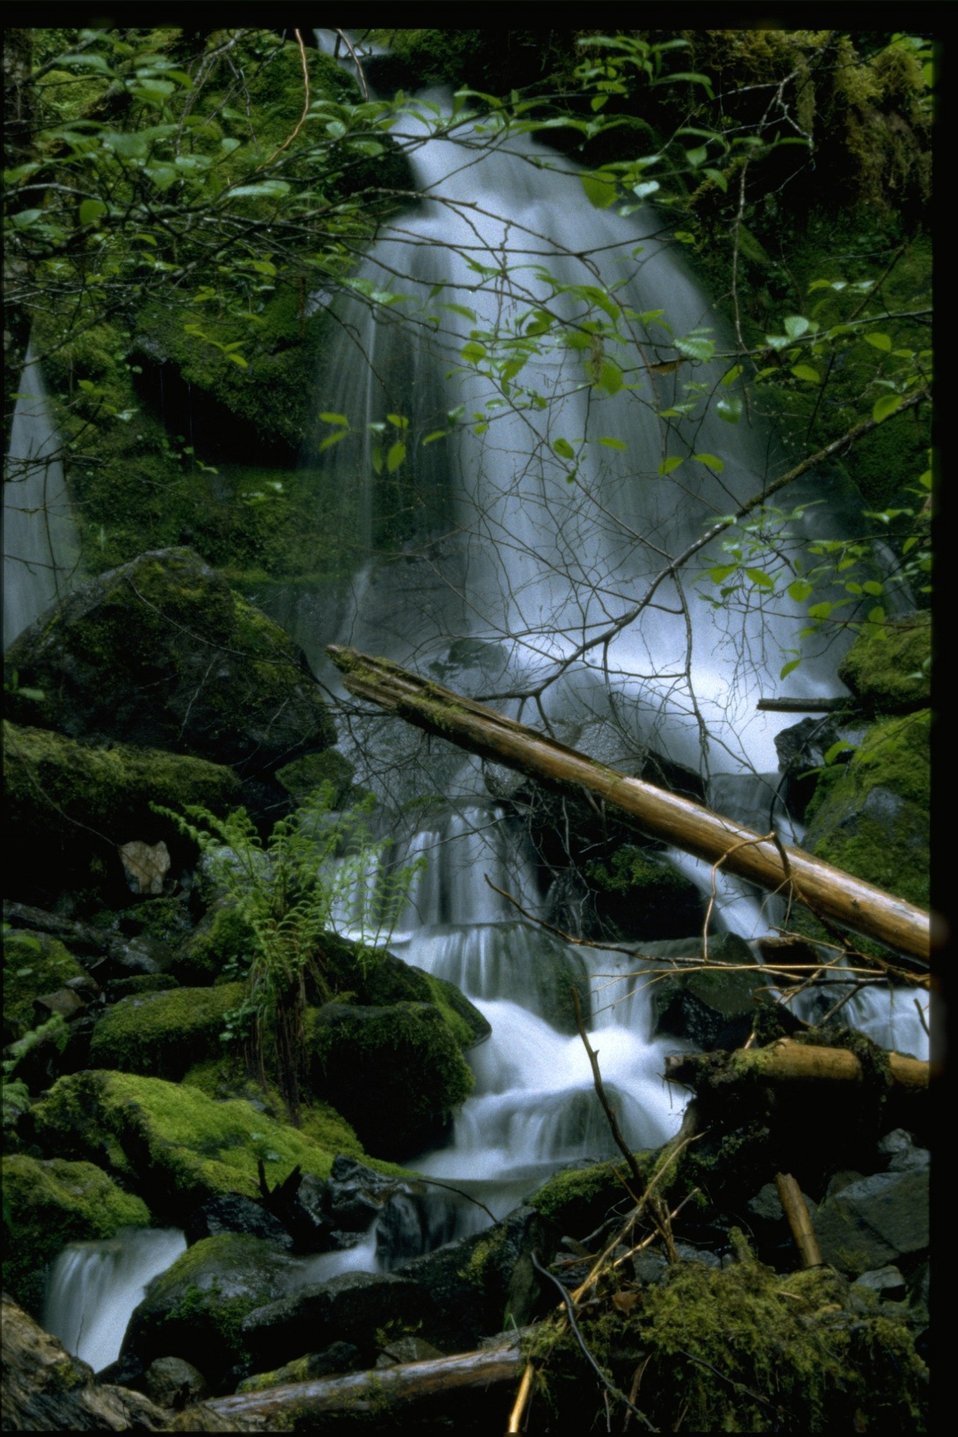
Swiftwater stream.